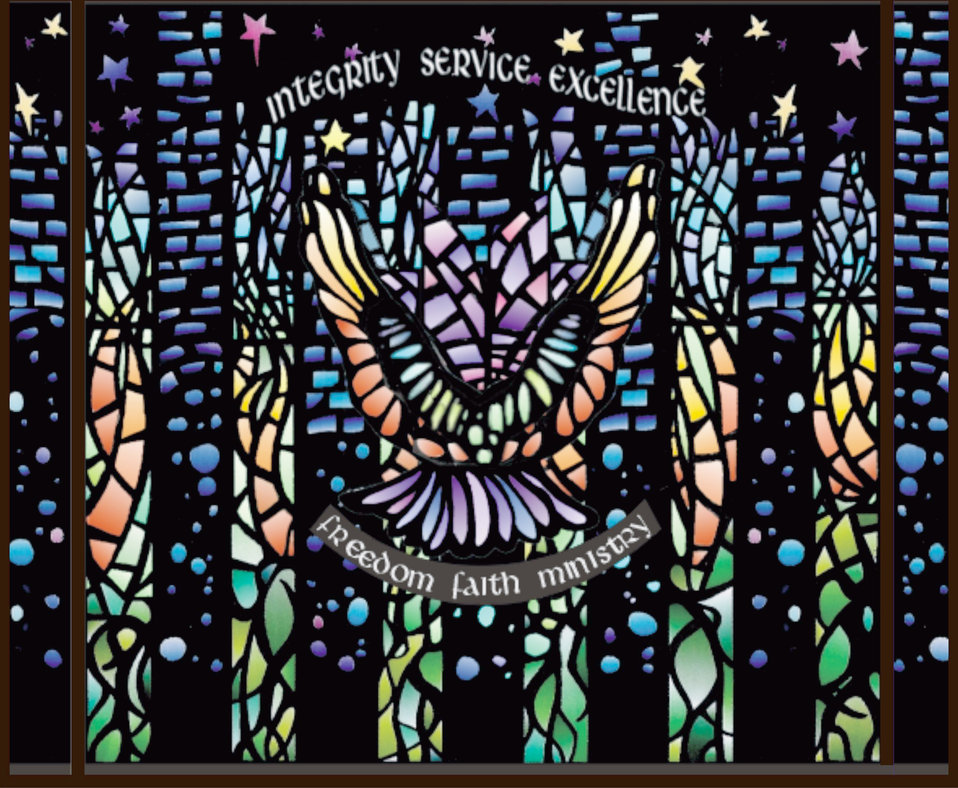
Academy gets 'great spirit'

U.S. AIR FORCE ACADEMY, Colo. -- Air Force chaplains dedicated the community center chapel's new stained-glass window here March 8. The